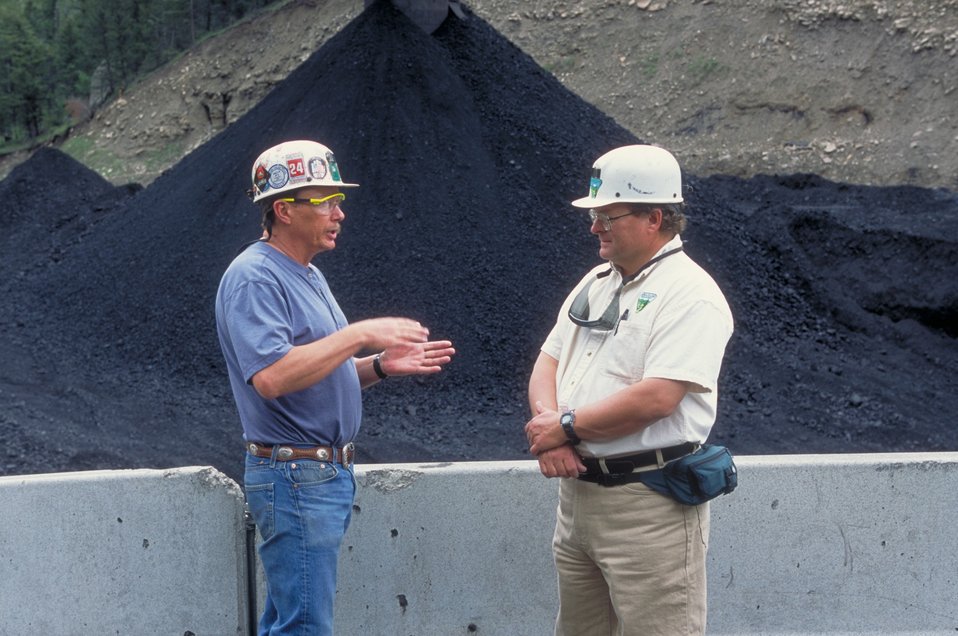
Coal production near Price, Utah.